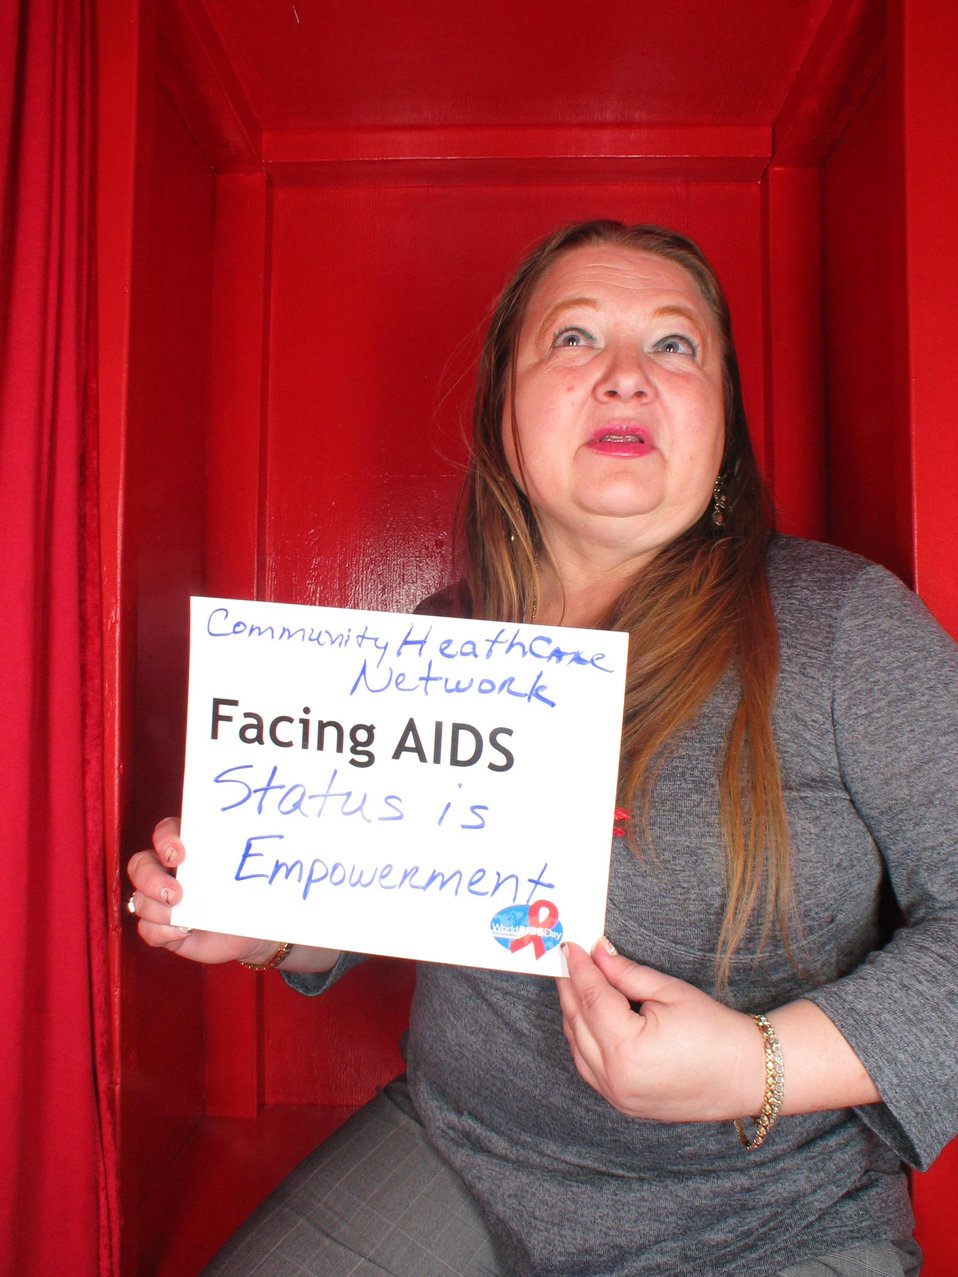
Facing AIDS Status is empowerment